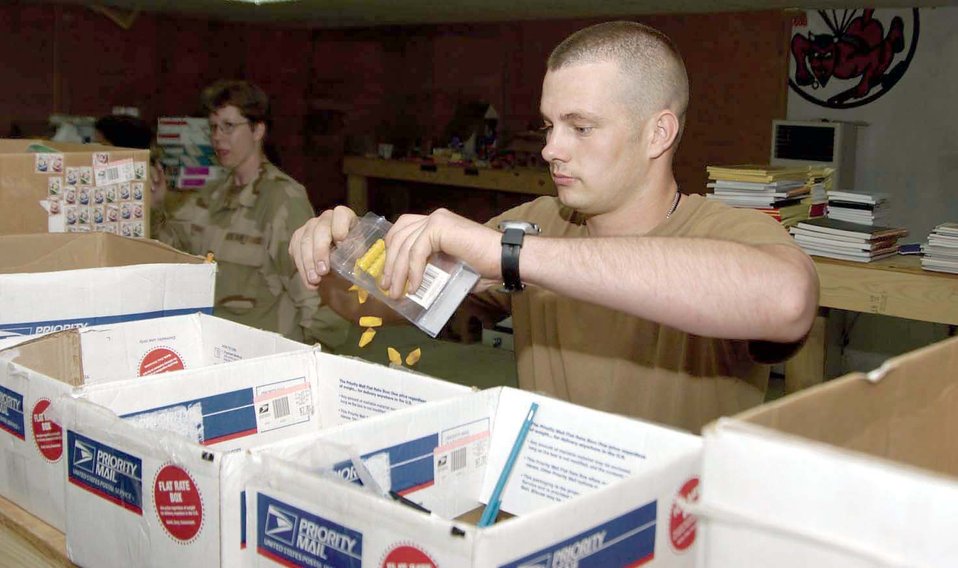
Volunteers collect supplies for local Iraqi schools

KIRKUK AIR BASE, Iraq -- Airman 1st Class Riley Williams opens packages of items that will be sorted into individual bags for local schools. He is assigned to the 506th Expeditionary Logistics Readiness Squadron.